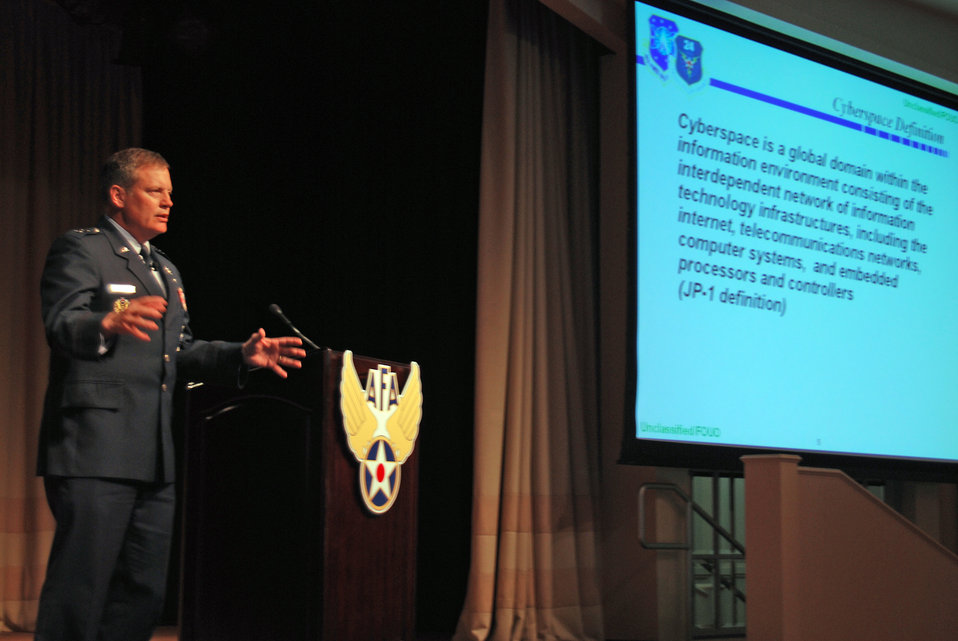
Air Force leaders speak at 2009 Global Warfare Symposium

Maj. Gen. Richard E. Webber discusses the Air Force's cyberspace mission at the 2009 Air Force Association Global Warfare Symposium Nov. 19, 2009, in Los Angeles. Senior leaders addressed such issues as space, cyberspace and deterrence to Airmen, civilians and industry partners. General Webber is the 24th Air Force commander.